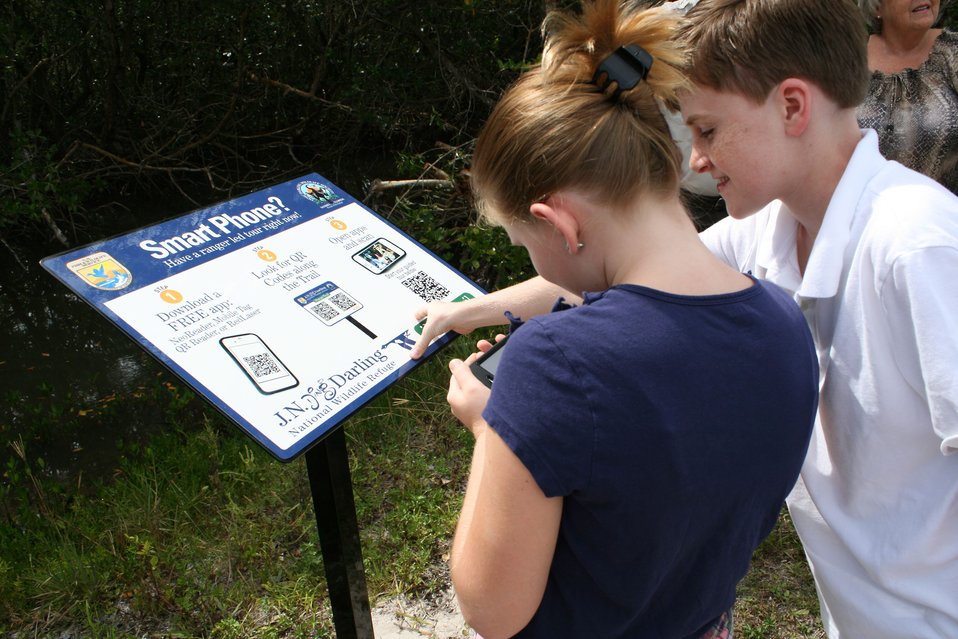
QR codes at Ding Darling Refuge

Visitors to J.N. “Ding” Darling National Wildlife Refuge in Florida scan quick response (QR) codes along the iNature Trail into their smartphone. (Chelle Koster Walton)